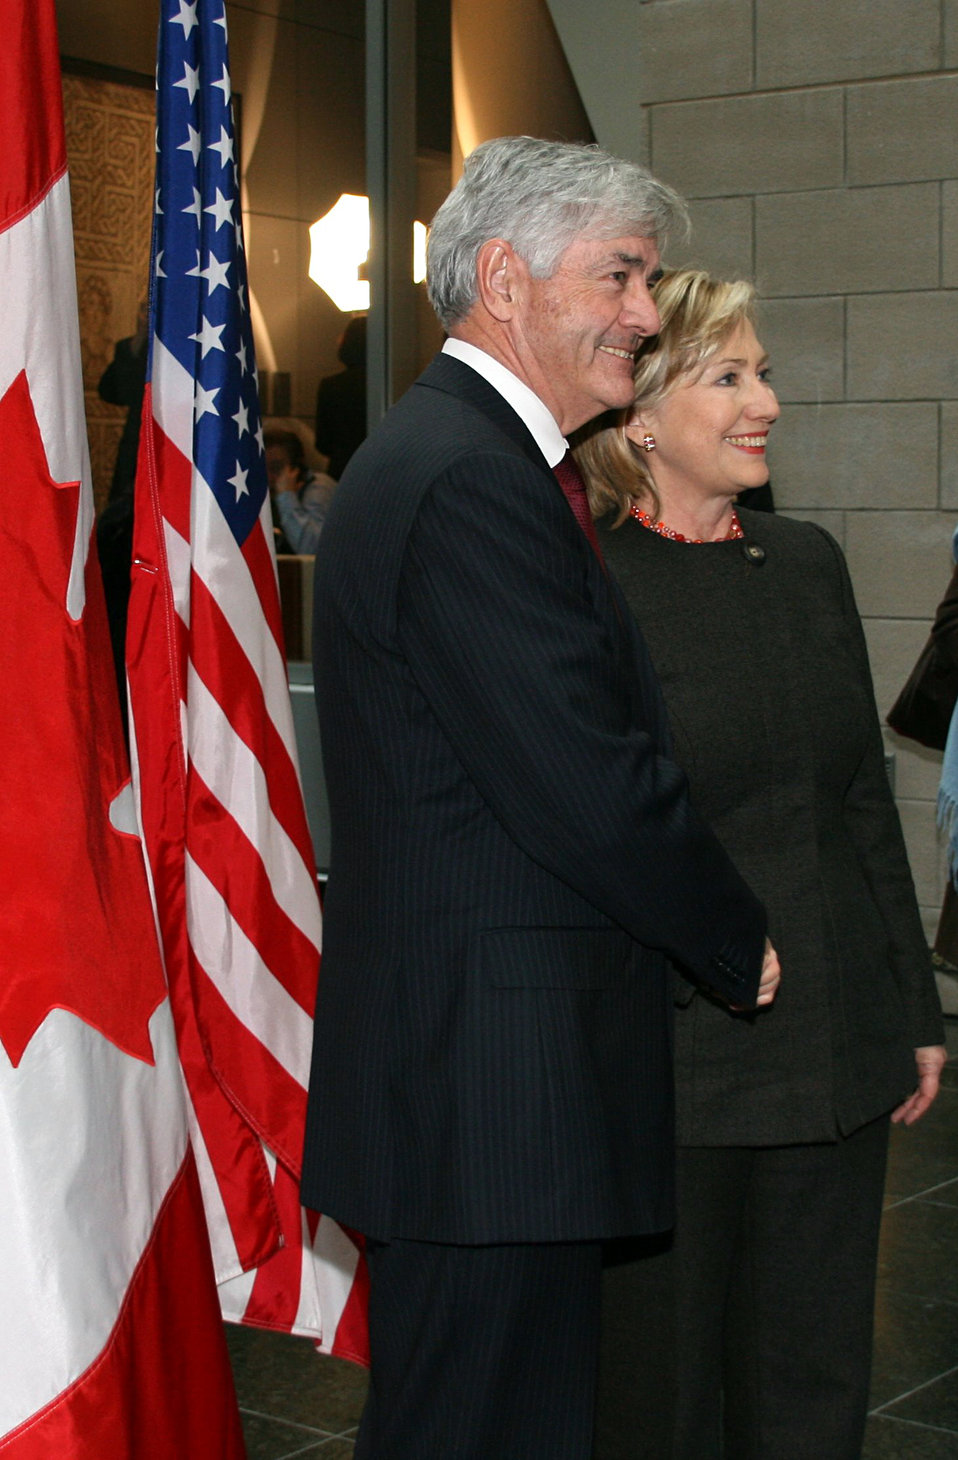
Secretary Clinton in Montreal

U.S. Secretary of State Hillary Rodham Clinton shakes hands with Canadian Foreign Minister Lawrence Cannon in Montreal, Canada January 25, 2010.